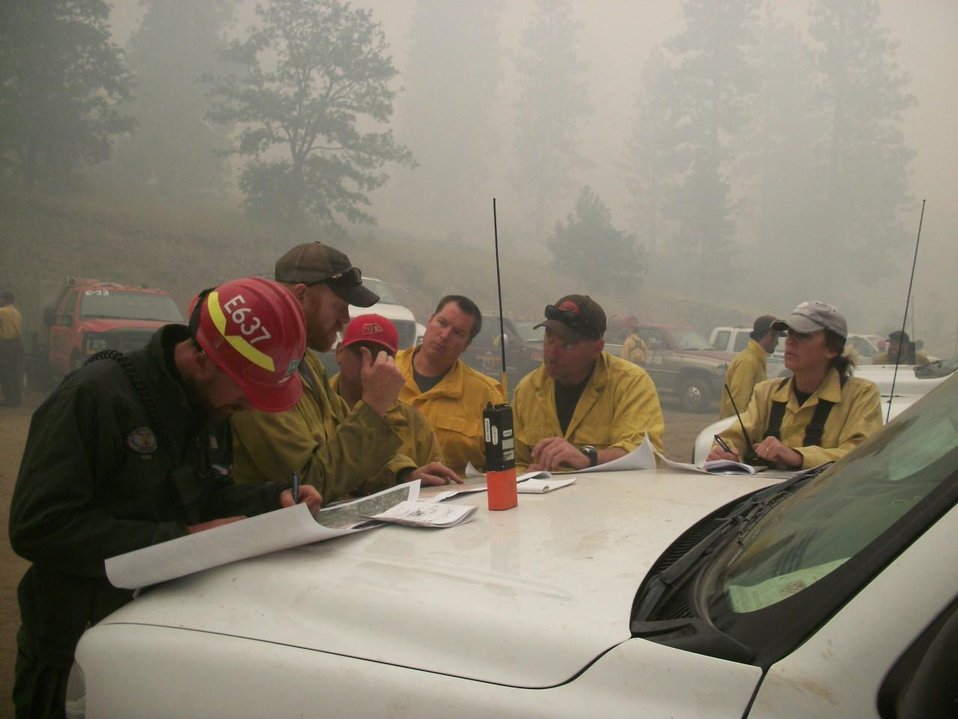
Task force receives briefing about operations to fight Mile Marker 28 Fire. The Mile Marker 28 Fire near Goldendale, WA began on Jul. 24, 2013 is under investigation and has consumed approximately 20,337 acres. The fire is approximately 25% contained.